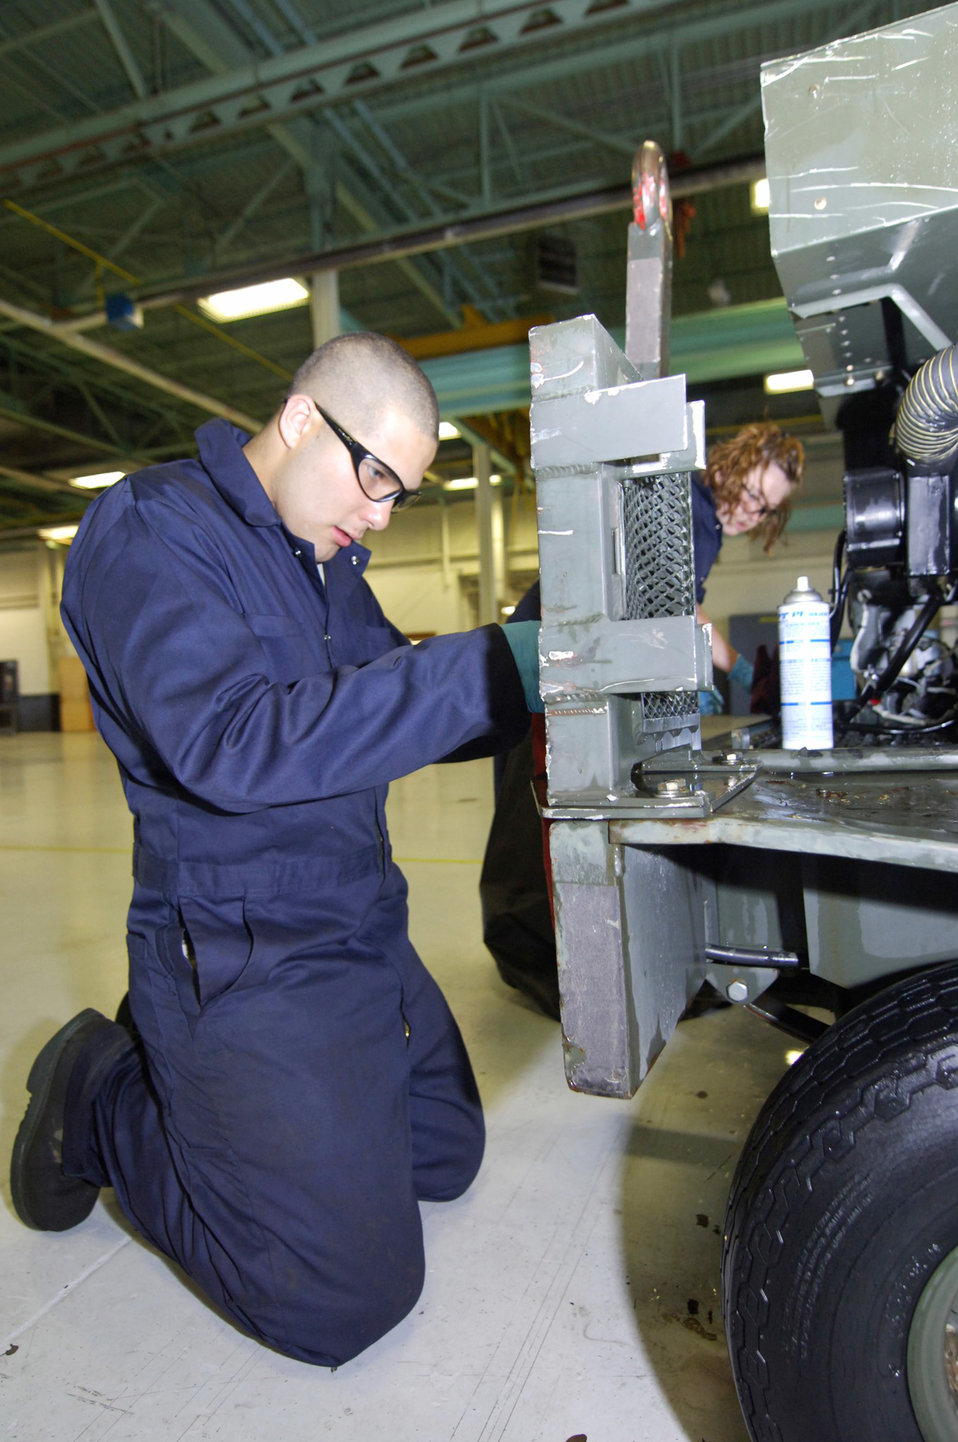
Minot Airmen use AFSO 21 to save $1 million annually

Airman 1st Class Michael Monge-Sansone oils a dash 95 large air start system July 27 at Minot Air Force Base, N.D. The 5th Maintenance Squadron Aerospace Ground Equipment Flight recently initiated an investment expected to yield a return of 60 saved man-hours weekly and more than $1 million annually. Airman Monge-Sansone is an AGE technician.